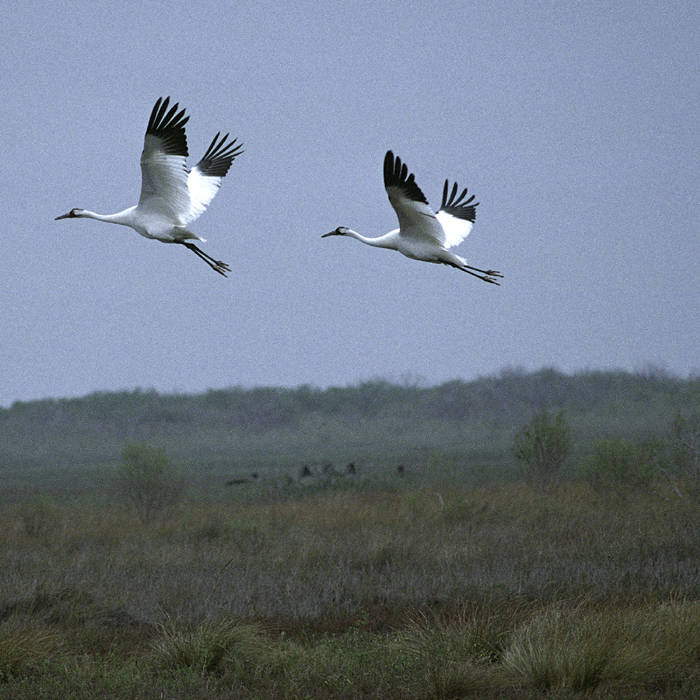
whooping cranes

Aransas National Wildlife Refuge, TX